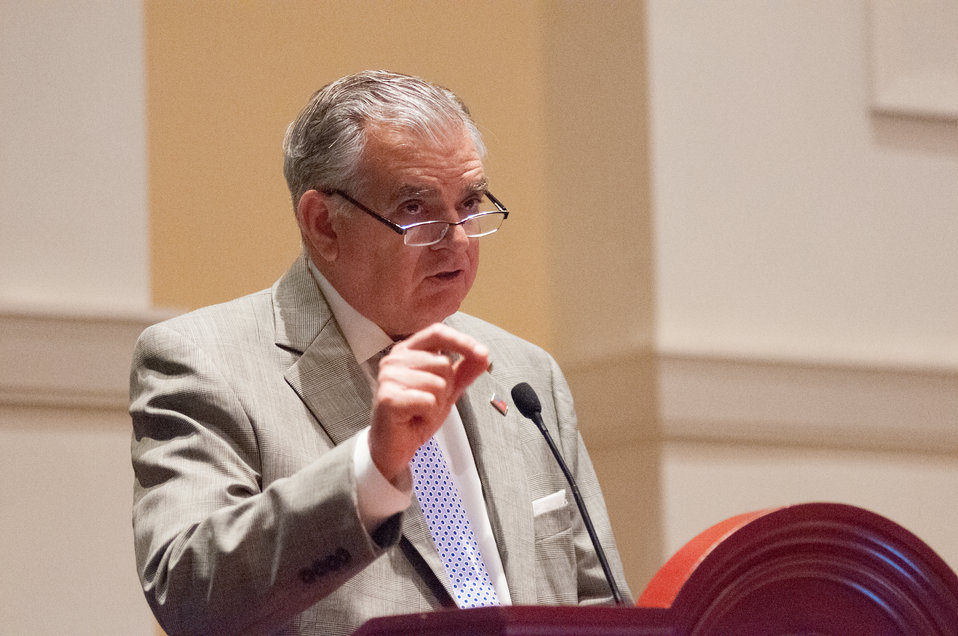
Department of Transportation (DOT) Secretary Ray LaHood speaks about extending for five years its agreement to work with DOT Federal Aviation Administration (FAA) and other partners to help develop a viable biofuel for the aviation industry. The Secretary signed the agreement with U.S. Department of Agriculture (USDA) Secretary Tom Vilsack at the Advanced Biofuels Leadership Conference at Gaylord National Harbor in Maryland, Monday, April 15, 2013.